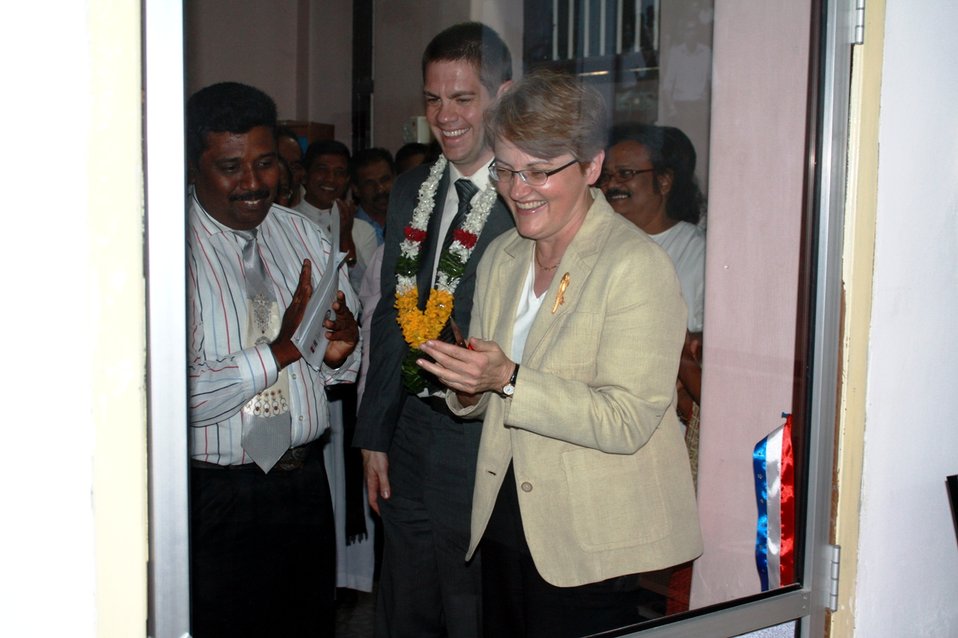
Ambassador Butenis, With PAO Anderson and Sughirtharaj, Celebrates the Opening of the American Corner Jaffna

U.S. Ambassador to Sri Lanka and Maldives Patricia A. Butenis, right, celebrates the opening of the American Corner Jaffna with Jeff Anderson, Public Affairs Officer, center, and Sughirtharaj, left, Director of the Jaffna Social Action Center in Colombo, Sri Lanka, on January 24, 2011.